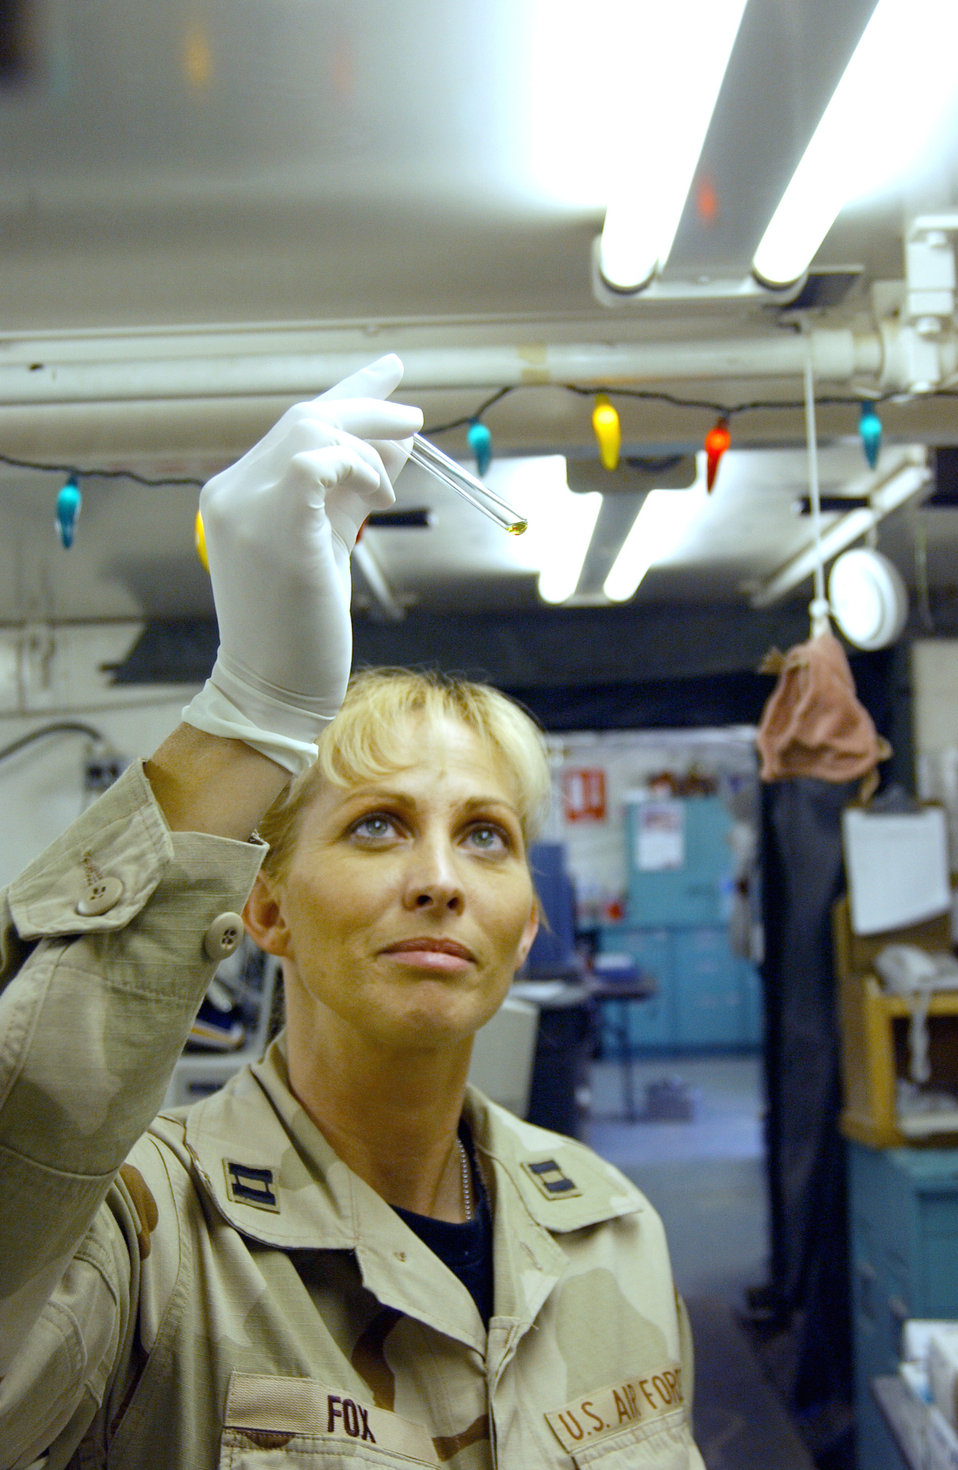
Hospital lab in theater

Capt. Donna Fox examines a test tube of blood to determine its type at the Air Force Theater Hospital laboratory at Balad Air Base, Iraq.